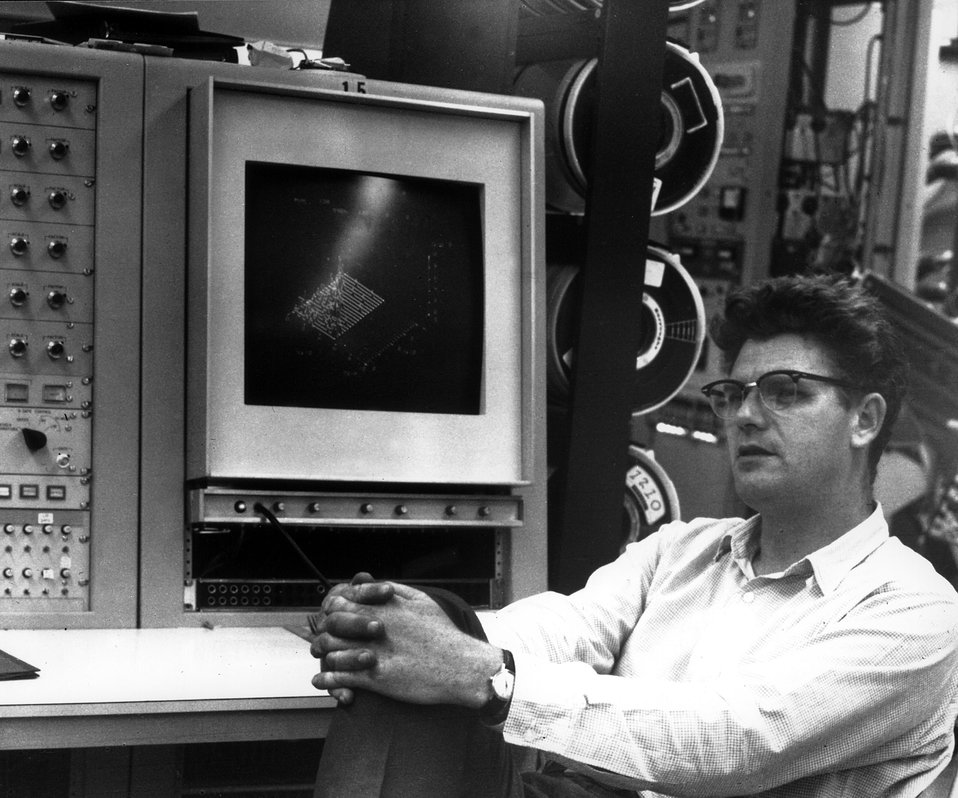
Richard Taylor, 1967. Nobel Prize for Physics, 1990.